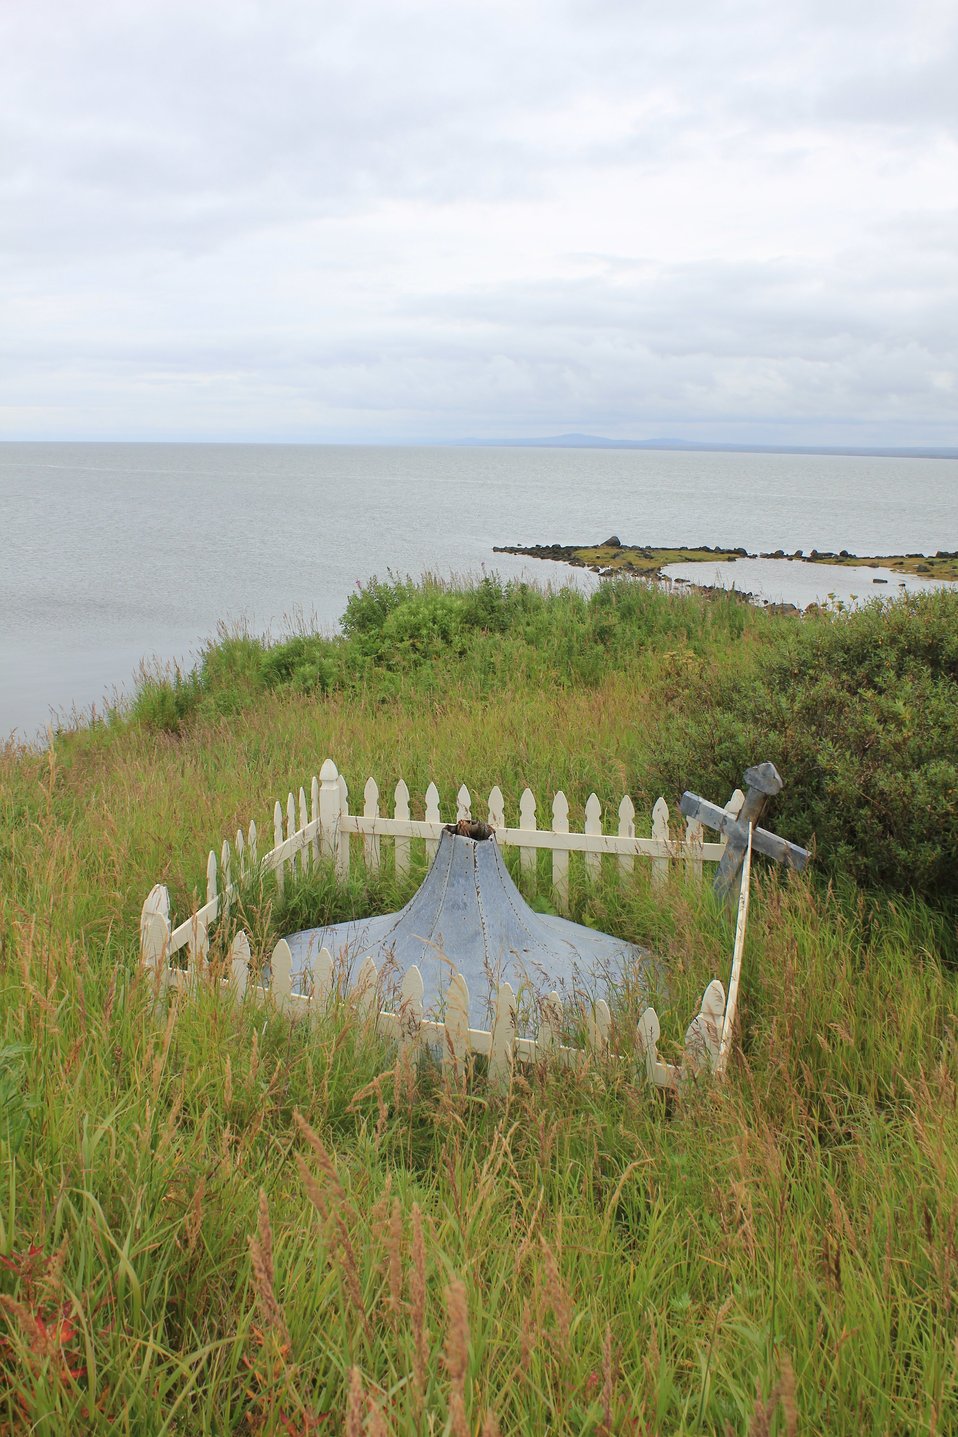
All that remains of the Russian Orthodox Church at St. Michael. The top of the spire that held the cross.